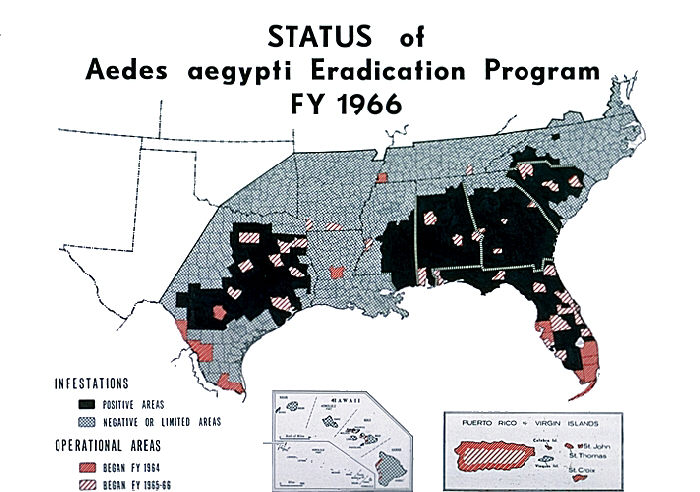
Map showing status of Aedes aegypti mosquito eradication program in the United States in FY 1966.